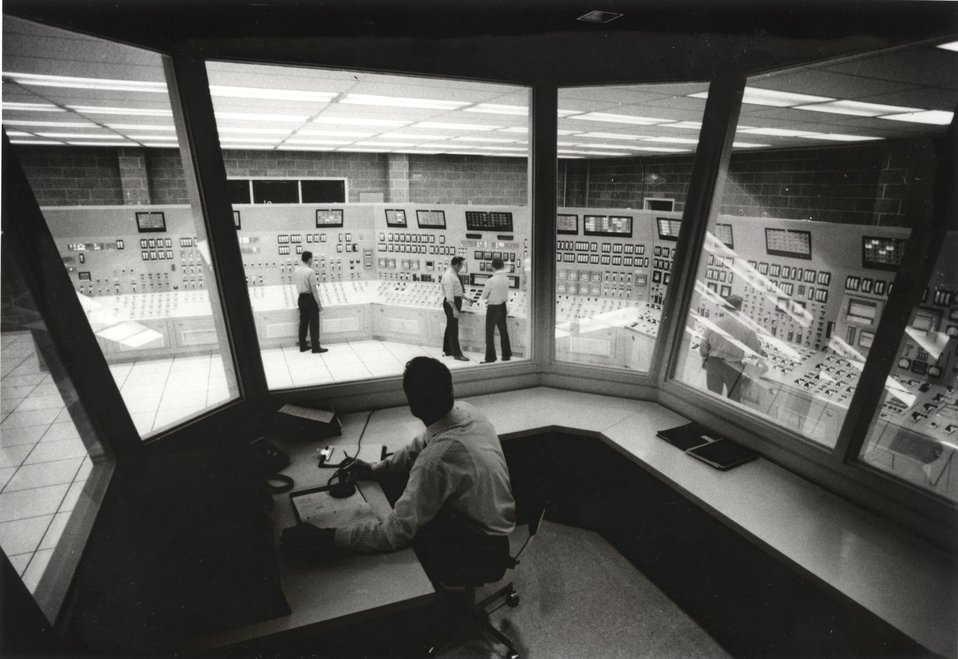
The Westinghouse Pressurized Water Reactor Simulator located at the Zion Nuclear Training Center. Circa 1974.